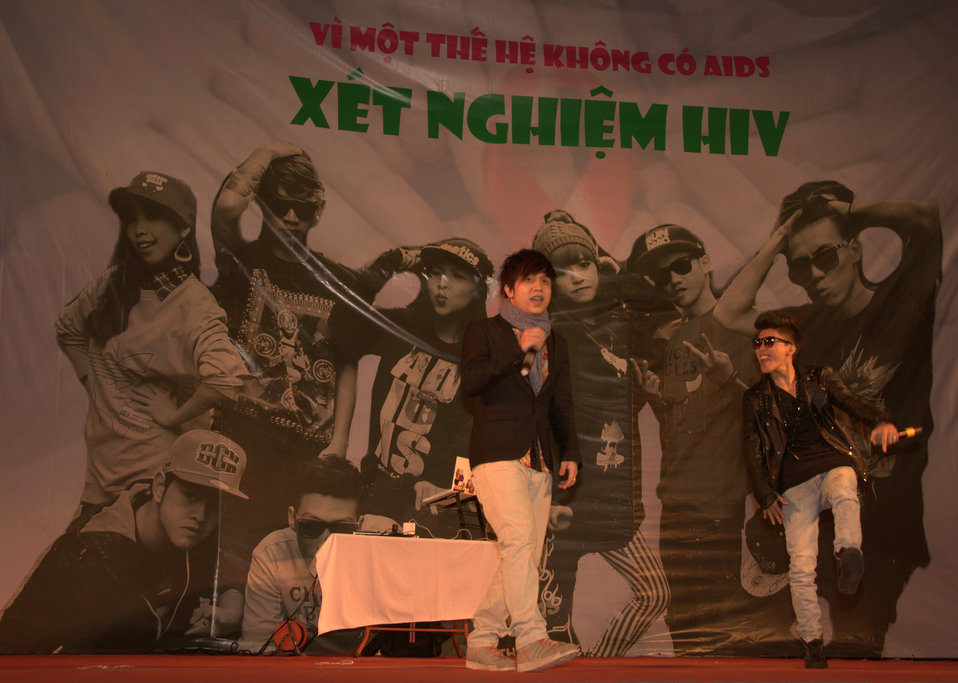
USAID and PEPFAR supports an outdoor concert to promote Vietnam's national action month for HIV

Hanoi, December 18, 2012.